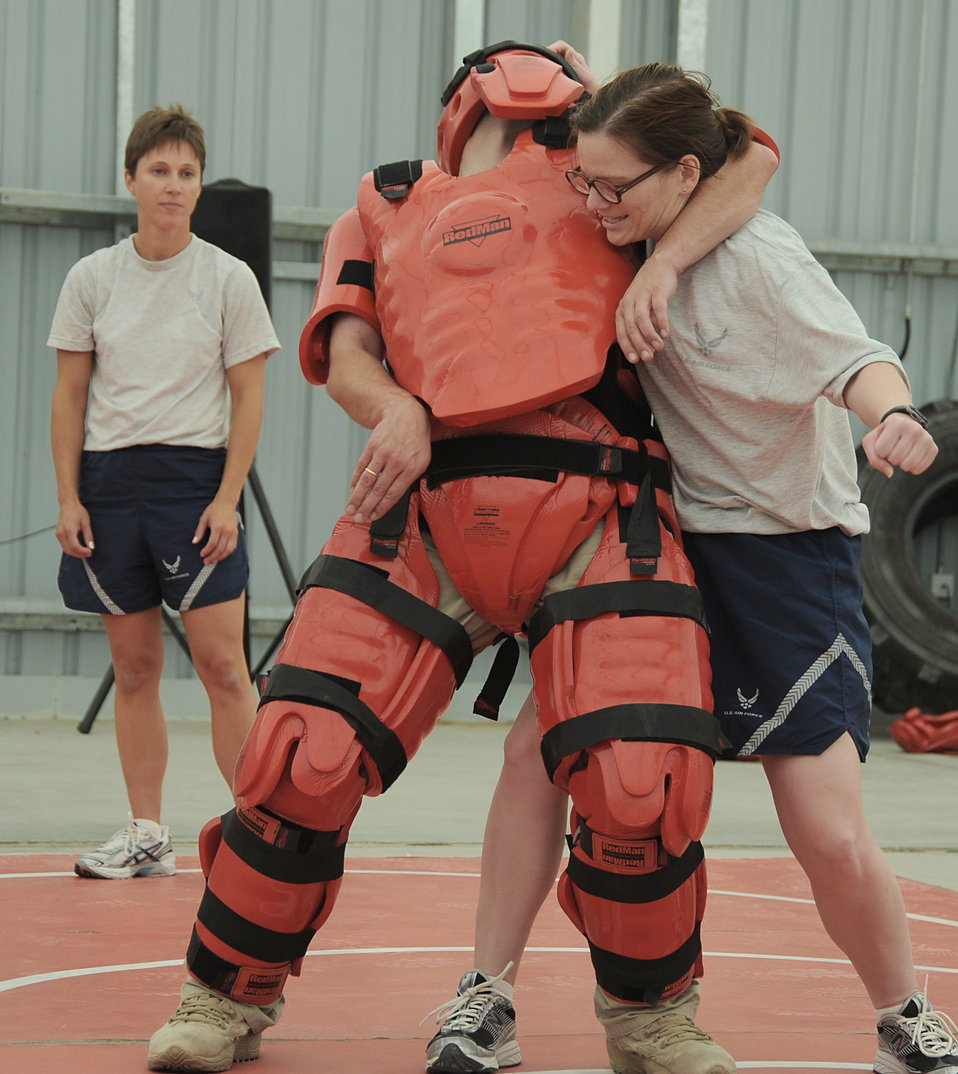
Getting defensive

During self-defense training Capt. Kelly McElroy prepares to give a blow to the midsection of Rick Baldwin, a contractor posing as the